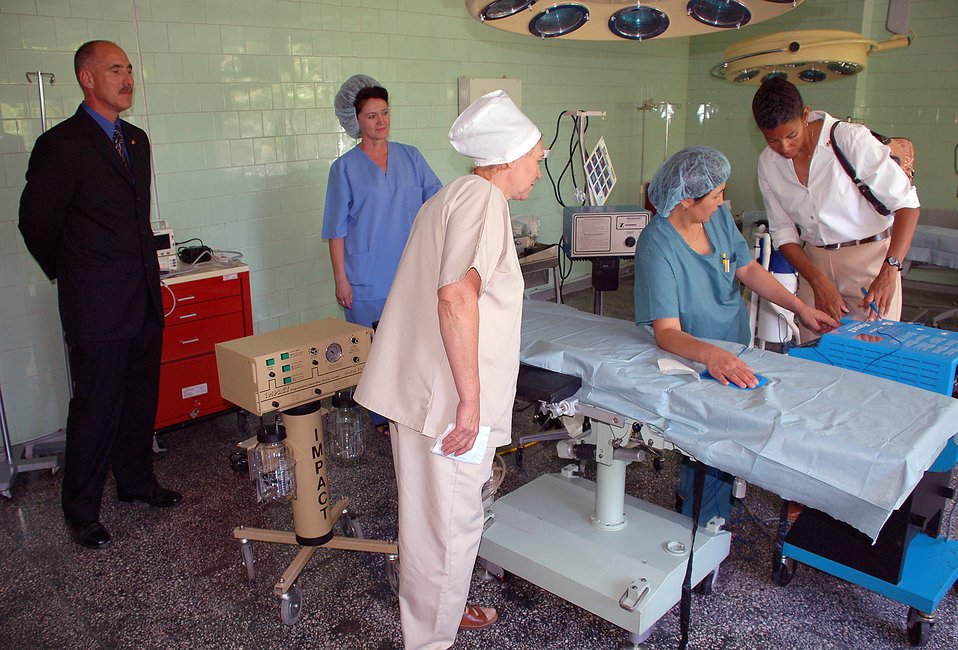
Manas medical group provides hope to local hospitals

Maj. Stephanie Gardner provides training to Chinara Djanaera, an operating nurse from the National Center of Oncology, following the hand-over ceremony of humanitarian medial equipment from the 376th Expeditonary Medical Group to three hospitals in Bishkek, Kyrgyzstan. Col. David Hocking, 376th EMDG commander, and two other nurses observe the training. The National Center of Oncology was one of three hospitals to receive the medical equipment. Major Gardner is a nurse anesthetist with the 376th EMDG.